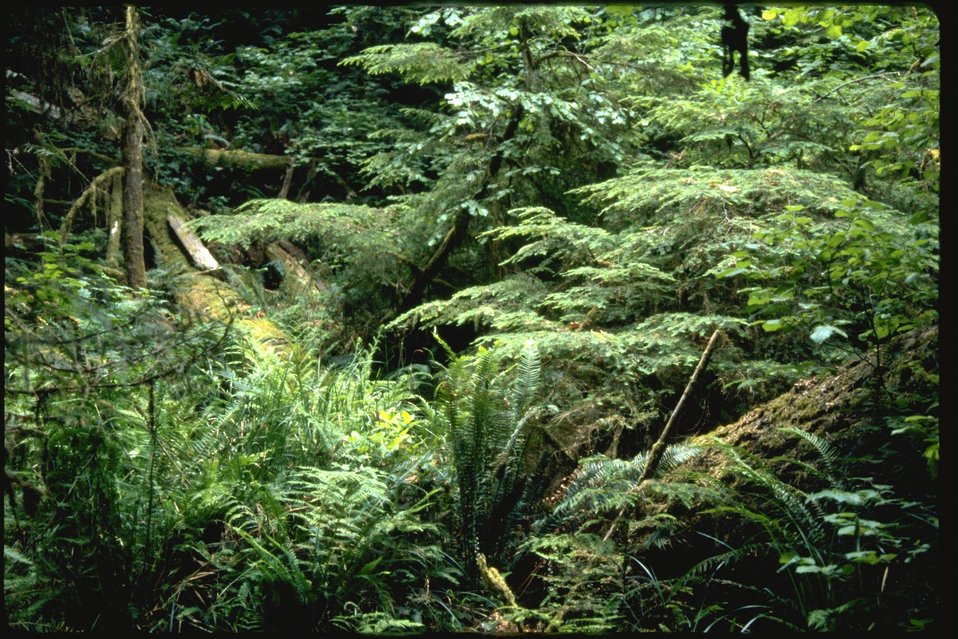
Scenic forest photograph.